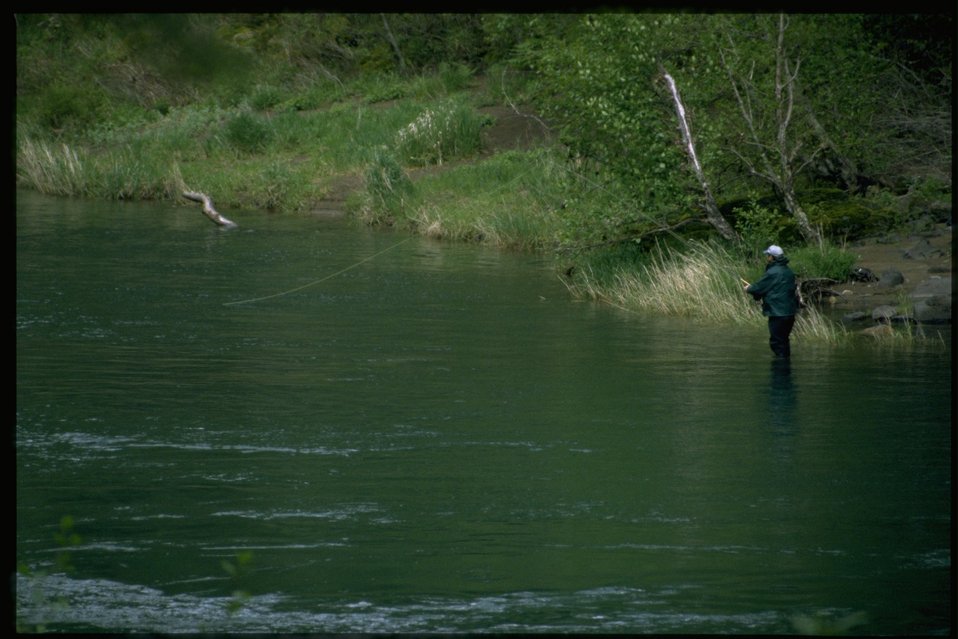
Man fishing in Swiftwater stream.